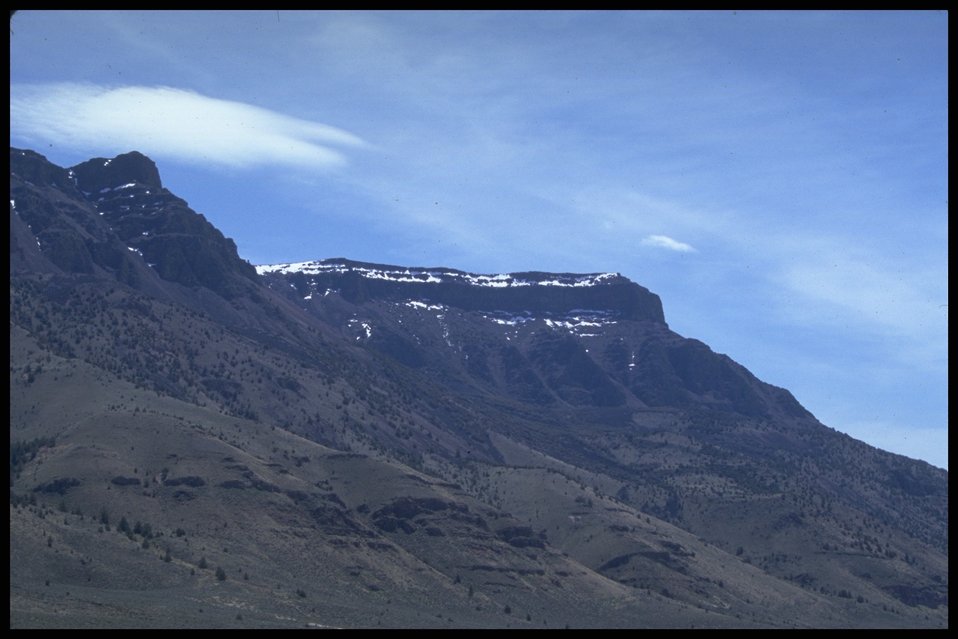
Scenic view of Hart Mountain, Lakeview District.